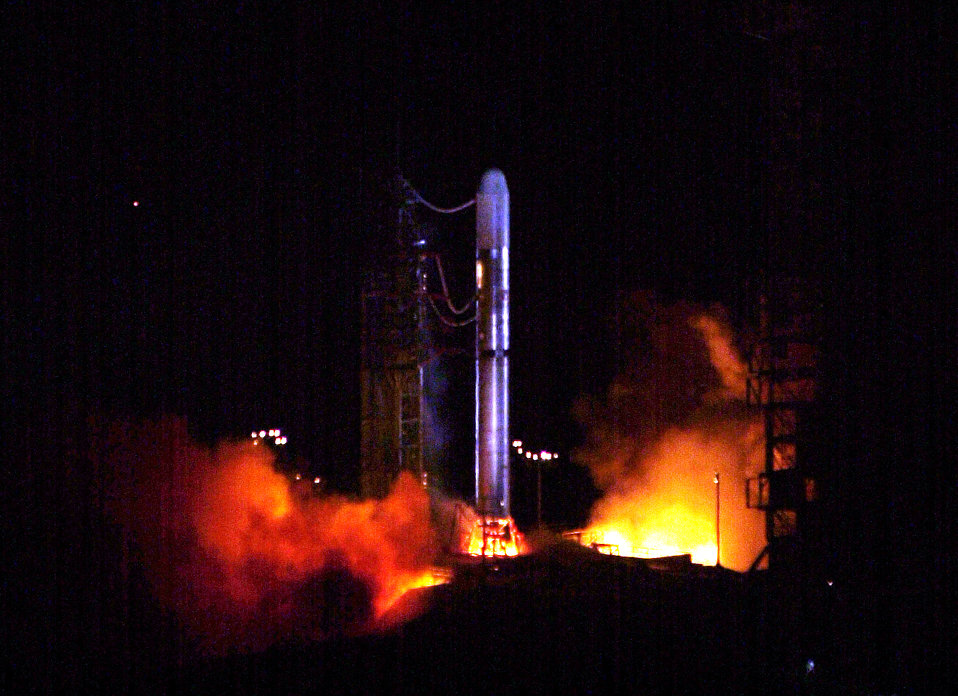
Titan II Coriolis

VANDENBERG AIR FORCE BASE, Calif. -- A Titan II Coriolis launches from here.